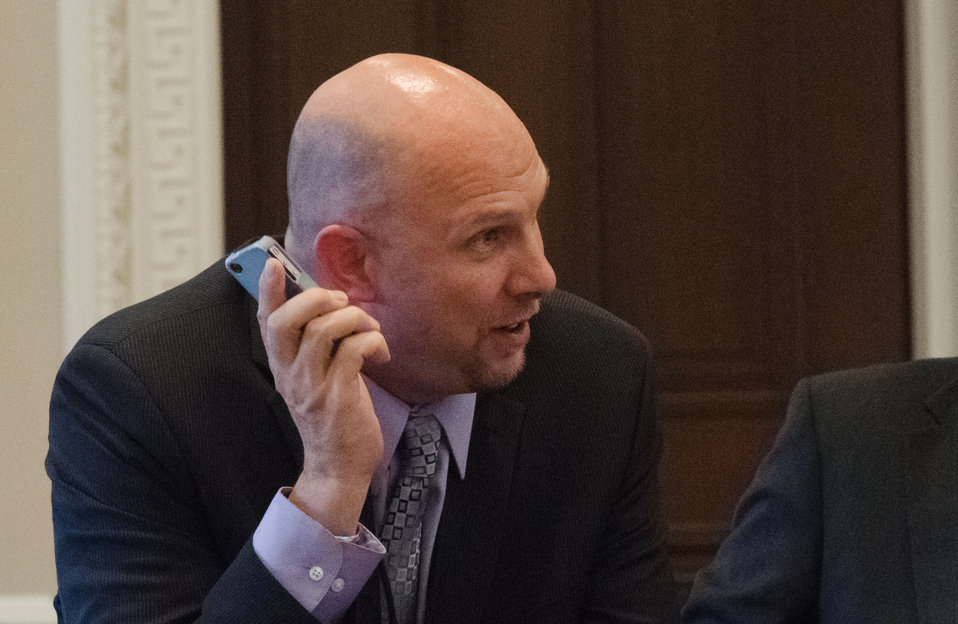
White House Office of Science and Technology Policy Assistant Director for Biotechnology Michael Stebbins, Ph.D. speaks during the White House Rural Council chaired by Agriculture Secretary Tom Vilsack at the White House in Washington, D.C. on Friday, Oct. 5, 2012. The White House Rural Council discusses recent White House announcements and Secretary Vilsack asked council members to outline their work plan for the coming months.